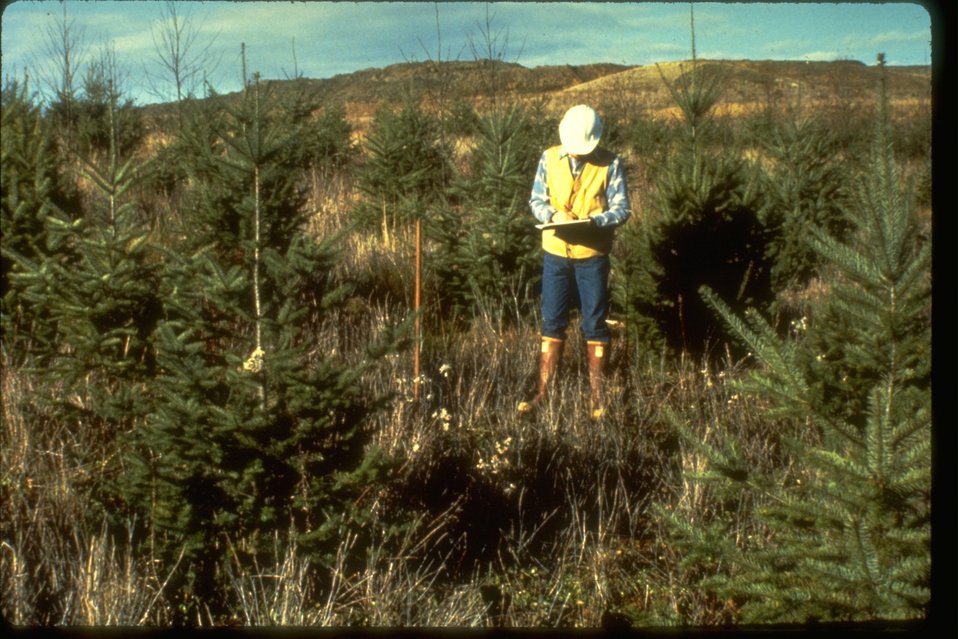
Douglas Fir grows after 5 years in reclaimed site near Centralia coal mine.